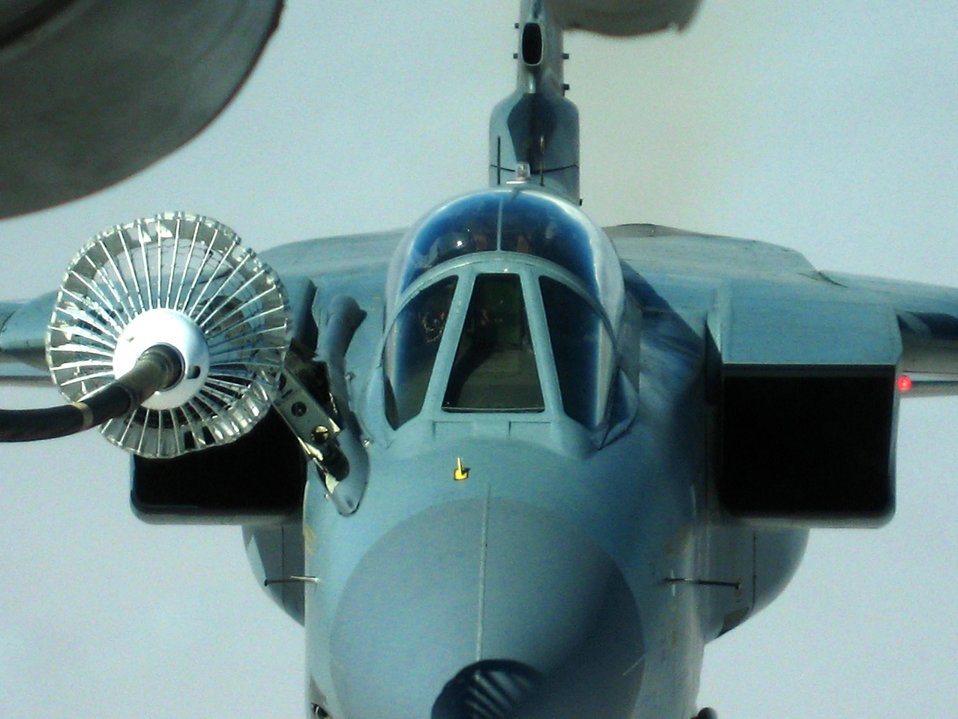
Refuel for the fight

A Royal Air Force Tornado bomber/fighter aircraft connects with the trailing drogue of a KC-10 Extender over Iraq Nov. 5. The KC-10 is assigned to the 380th Air Expeditionary Wing, the largest air refueling unit in Southwest Asia, using KC-10s and KC-135 Stratotankers to fuel U.S. and allied aircraft.